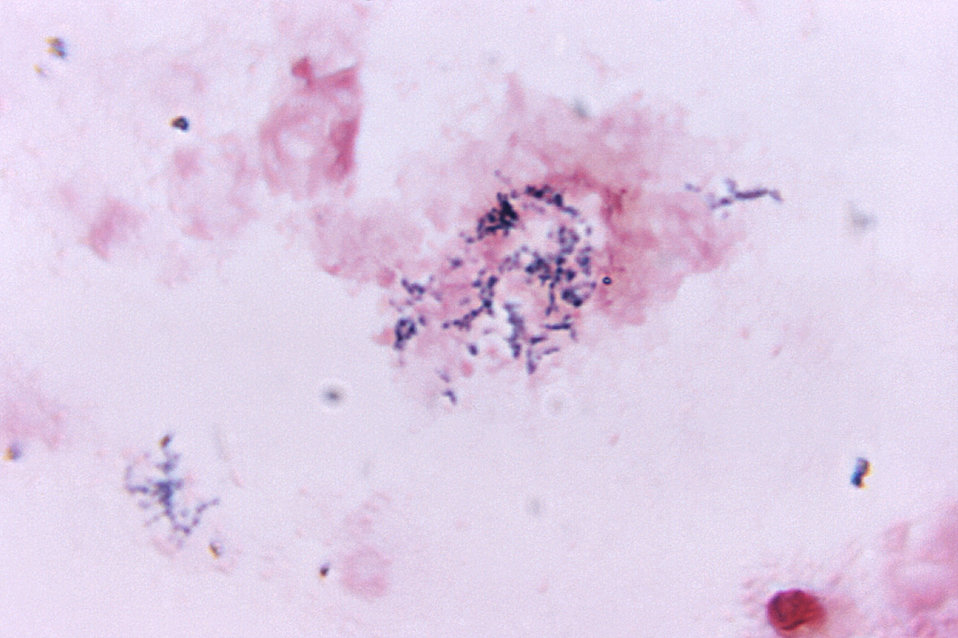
Magnified 1125X, this Gram-stained photomicrograph revealed some of the ultrastructural details associated with a specimen of thawed pus extracted from the jaw bone of a Dall sheep, Ovis dalli with a suspected case of actinomycosis. Note that the specimen revealed the presence of branched Gram-positive organisms. See PHIL 10804 for a gross pathologic view of the mandible from which this specimen was derived.